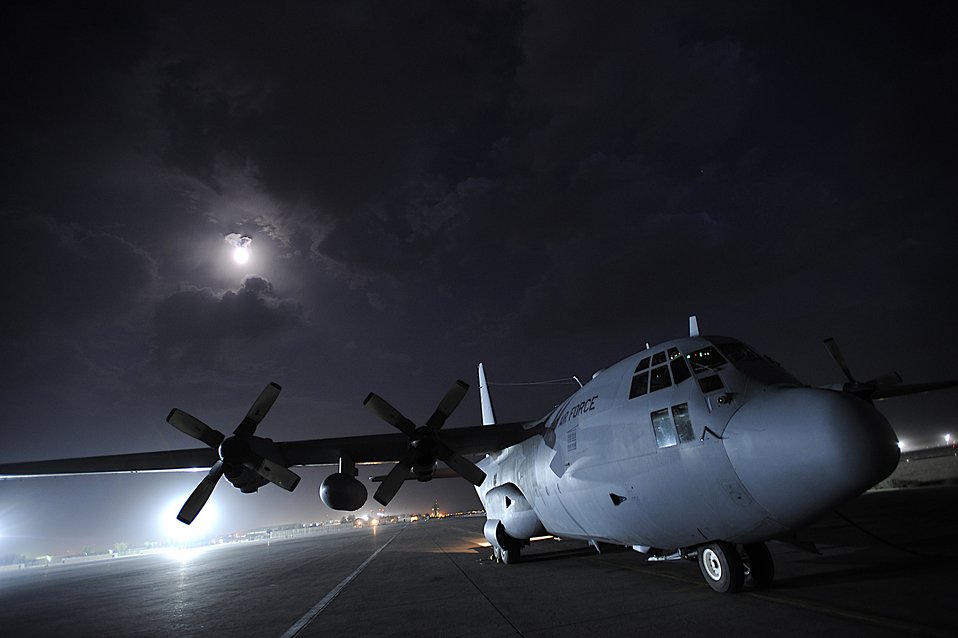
Working by moonlight

An Iraqi air force C-130 waits for its cargo Oct. 11 at Joint Base Balad, Iraq. The aircraft was on a cargo resupply mission with members of the U.S. Air Force 370th Air Expeditionary Advisory Squadron. The Iraqi air force consists of more than 100 aircraft, including Mi-17 helicopters donated by Russia, UH-1H helicopters donated by Jordan, C-130s donated by the United States, as well as other aircraft.